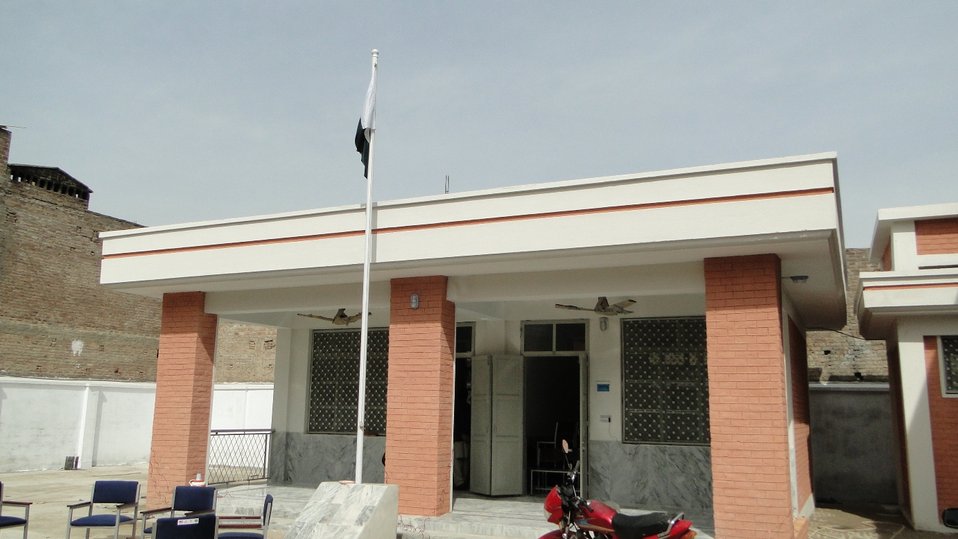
Buner School

Peshawar, March 14, 2012 - The Provincial Reconstruction, Rehabilitation and Settlement Authority (PaRRSA) handed over today to the KP Education Department the first of the 122 U.S. Government-sponsored schools at Torwarsak, Buner.